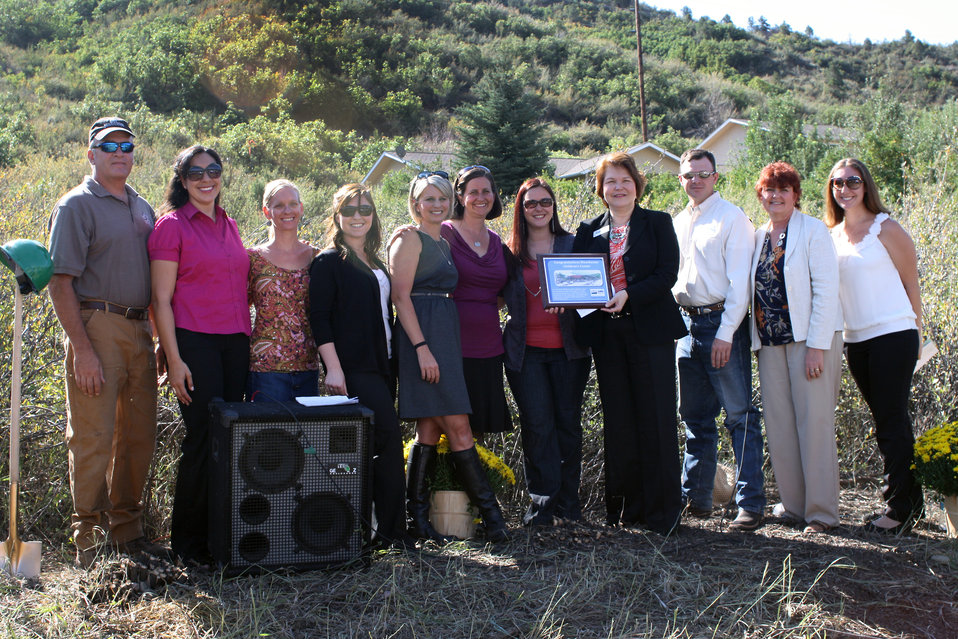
U.S. Department of Agriculture’s (USDA) Rural Development (RD) Business and Cooperative Programs Administrator Judith Canales (black suit) assists at the groundbreaking of the Riverhouse Children’s Center in Durango, CO on Thursday, Aug. 30, 2012. USDA RD provided $1.6 million in Community Facility loan funding for the project.